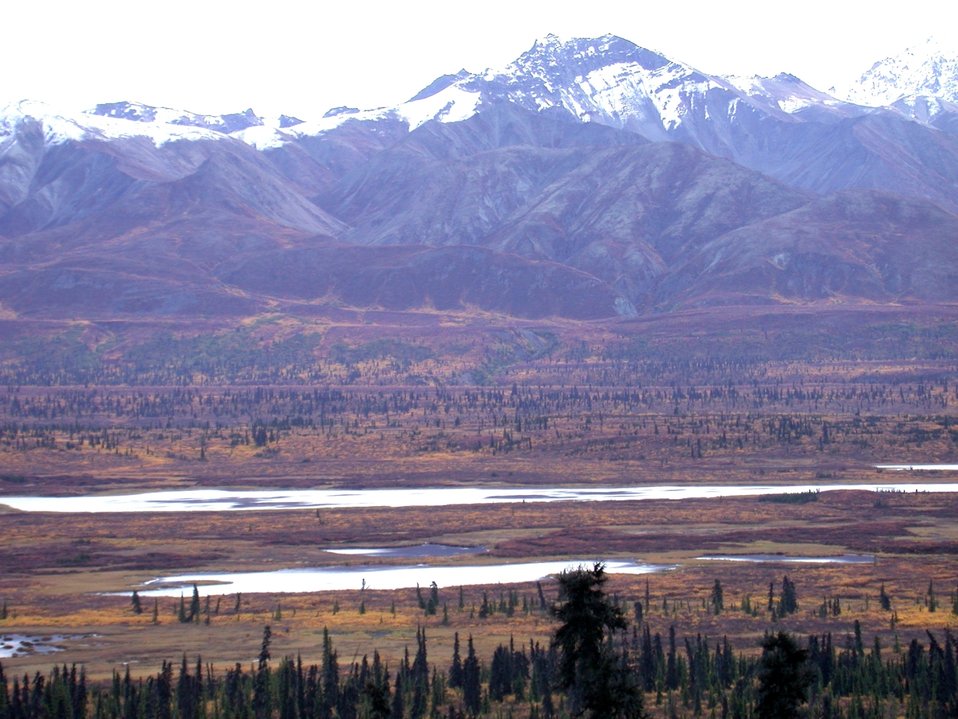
Part of the Alaska Range as seen from Alaska Highway 3.